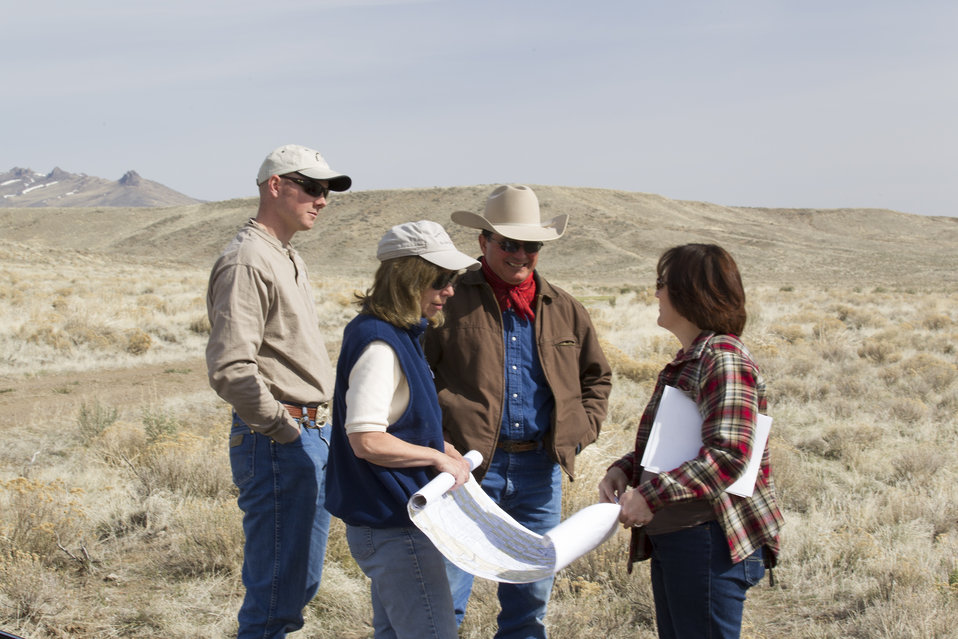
FWS Partners Program and BLM, Meeting with Landowners in Nevada